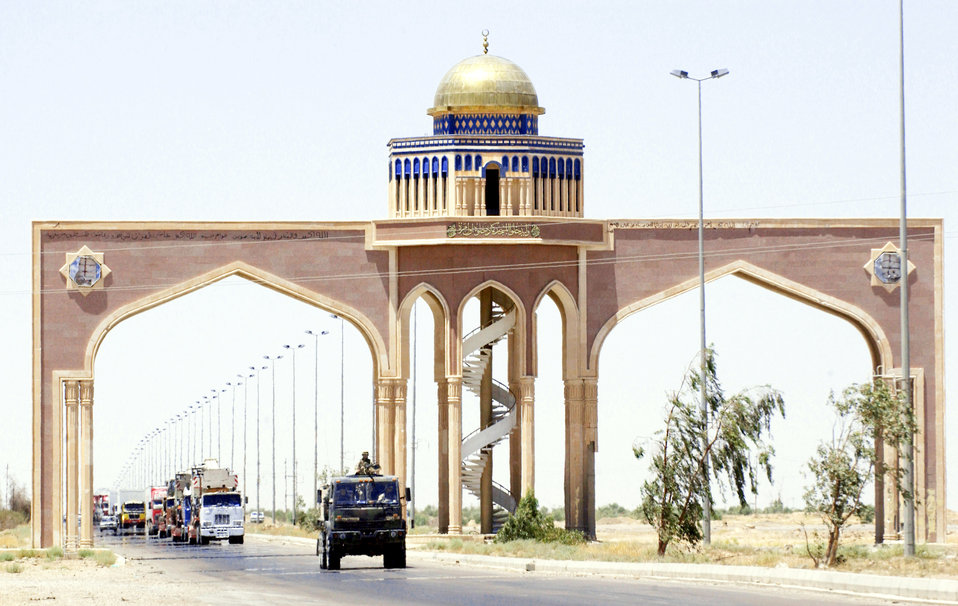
Course trains Airmen to drive for Army in Iraq

IRAQ -- A gun truck from the 2632nd Air Expeditionary Force Transportation Company leads a convoy on the main supply route from Baghdad to Tikrit. The company's Airmen provide security to military and civilian convoys as they move supplies to multiple forward-deployed locations throughout Iraq.